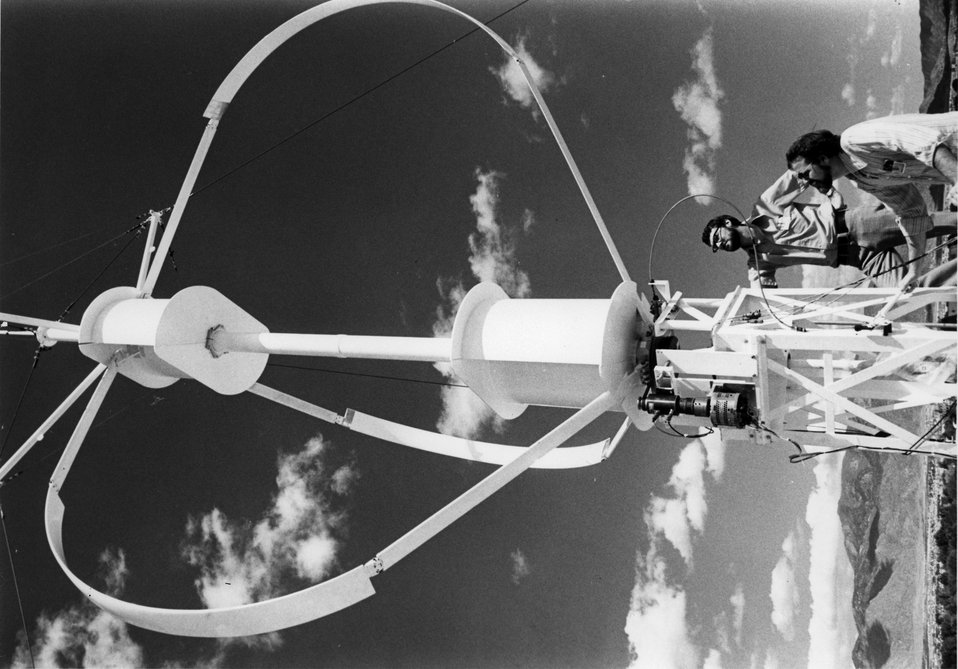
The Energy Research and Development Administration's Sandia Laboratories in Albuquerque, New Mexico have filed patent applications for improvements in the vertical axis wind turbine, which has been mounted atop a building at Sandia. c. 1974